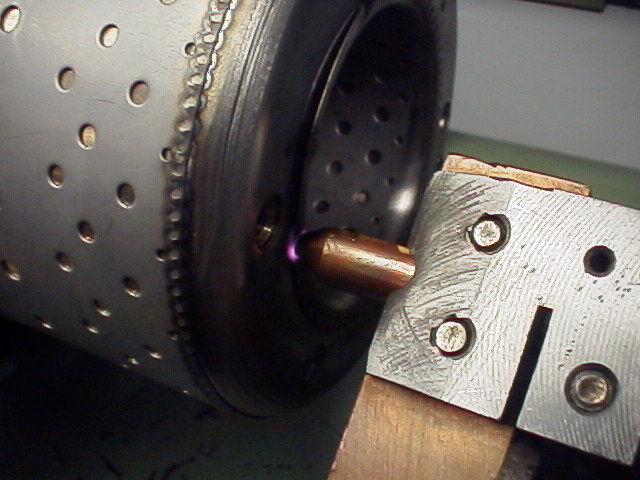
Nederlands: Spotwelded smal industrial product.